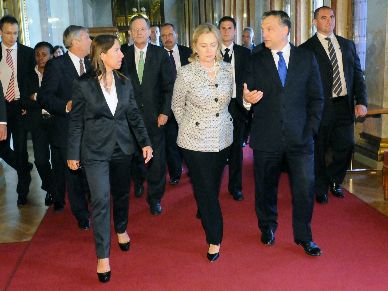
Secretary Clinton Walks with Ambassador Kounalakis and Hungarian Prime Minister Orbán

U.S. Secretary of State Hillary Rodham Clinton walks with U.S. Ambassador to Hungary Eleni Tsakopoulos Kounalakis and Hungarian Prime Minister Viktor Orbán in Budapest, Hungary, June 30, 2011.